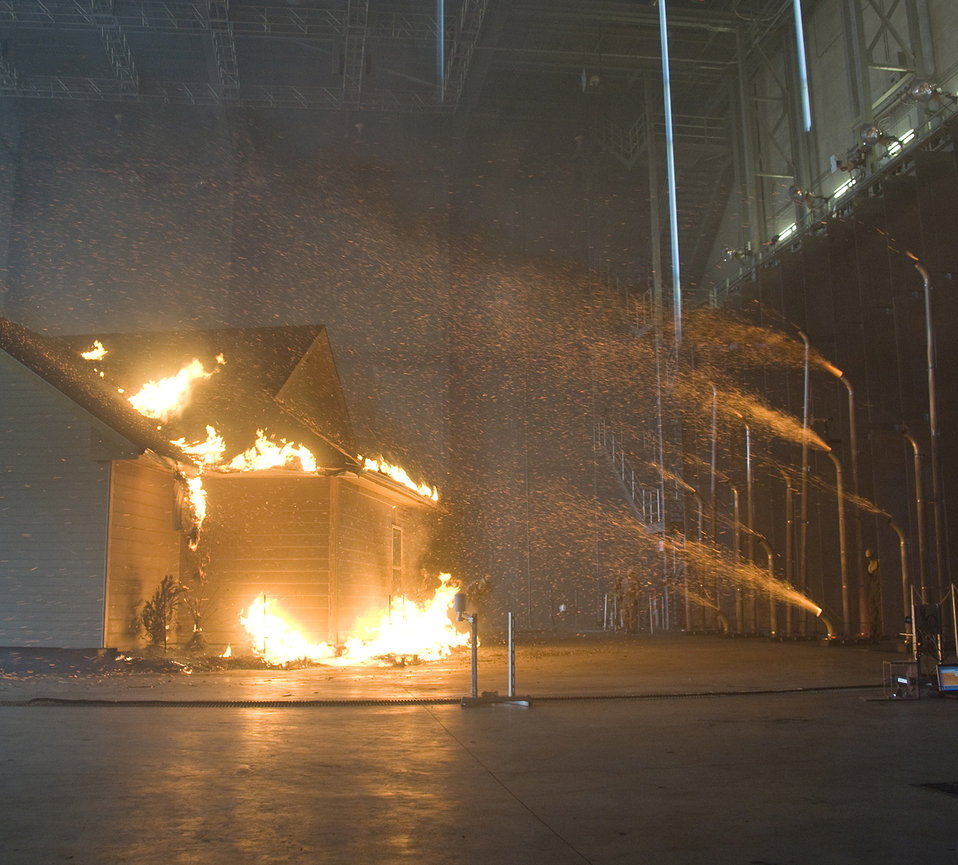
Wildfire Ignition Resistant Home Design

One of its many accomplishments during SRNS' third year included an SRNL led “Wildfire Ignition Resistant Home Design” program for the U.S. Department of Homeland Security. A media demonstration was given during Wildfire Media Day in March at the Insurance Institute for Business and Home Safety to illustrate that embers, rather than direct flame contact, cause many buildings to burn during wildfires.